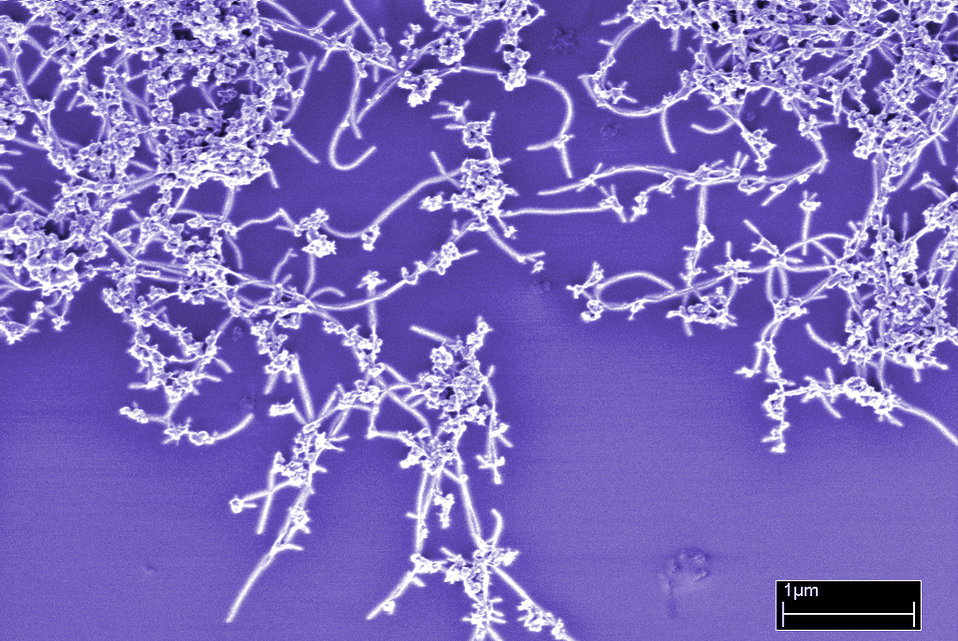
Carbon Nanotube Purity

A new NIST method for rapidly assessing the quality of carbon nanotubes was evaluated in part by comparing the results to electron micrographs, which revealed uneven composition such as large bundles of nanotubes and impurities such as metallic particles. (Color added.)